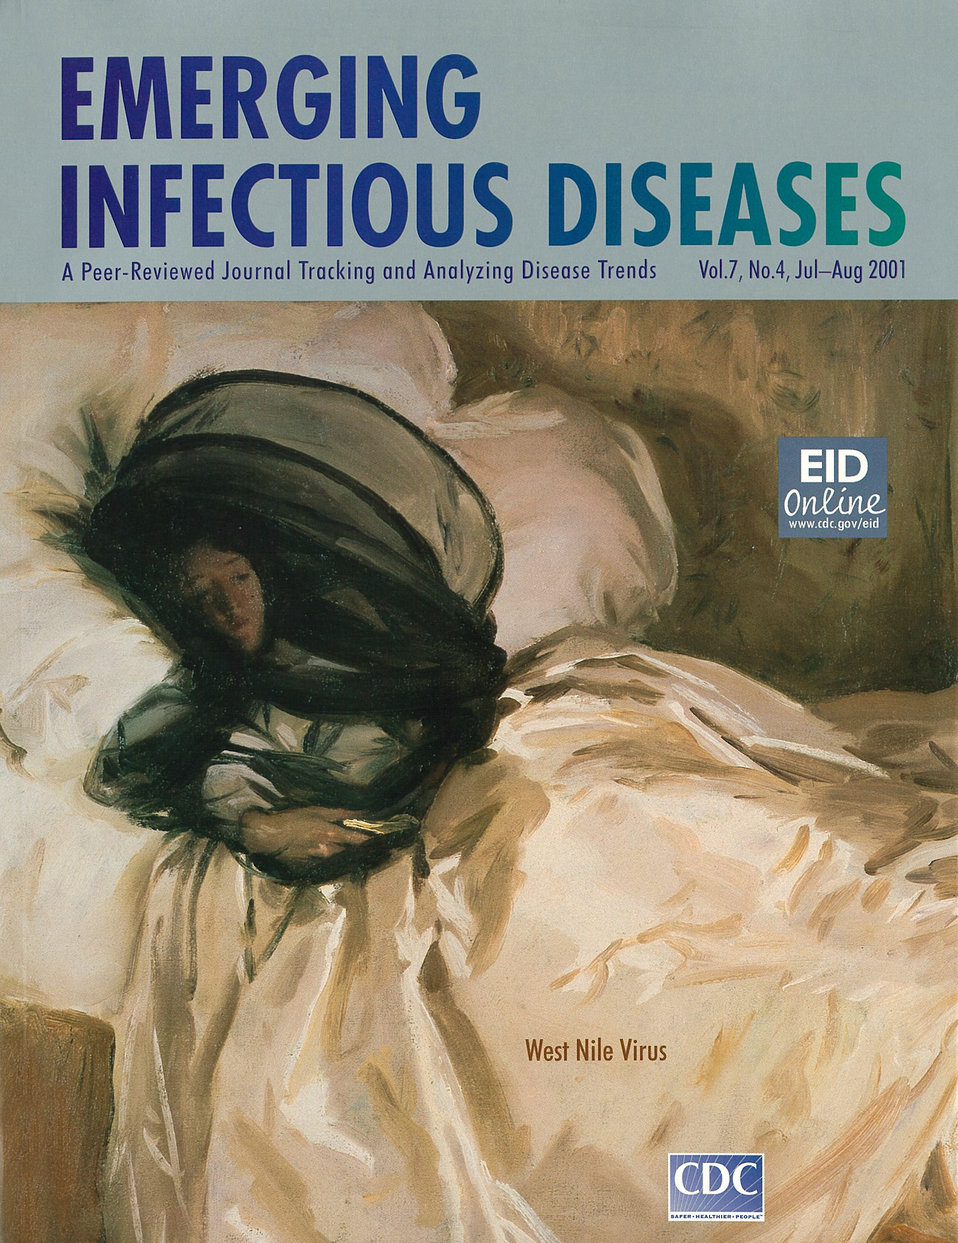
Emerging Infectious Diseases (EID) cover artwork for Volume 7, Number 4, July-August 2001 issue.